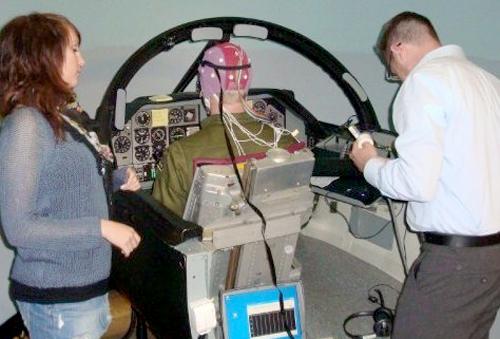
Air Force's 'Technology Horizons' makes science fiction a reality

Lab technicians analyze data from a human-machine coupling interface.